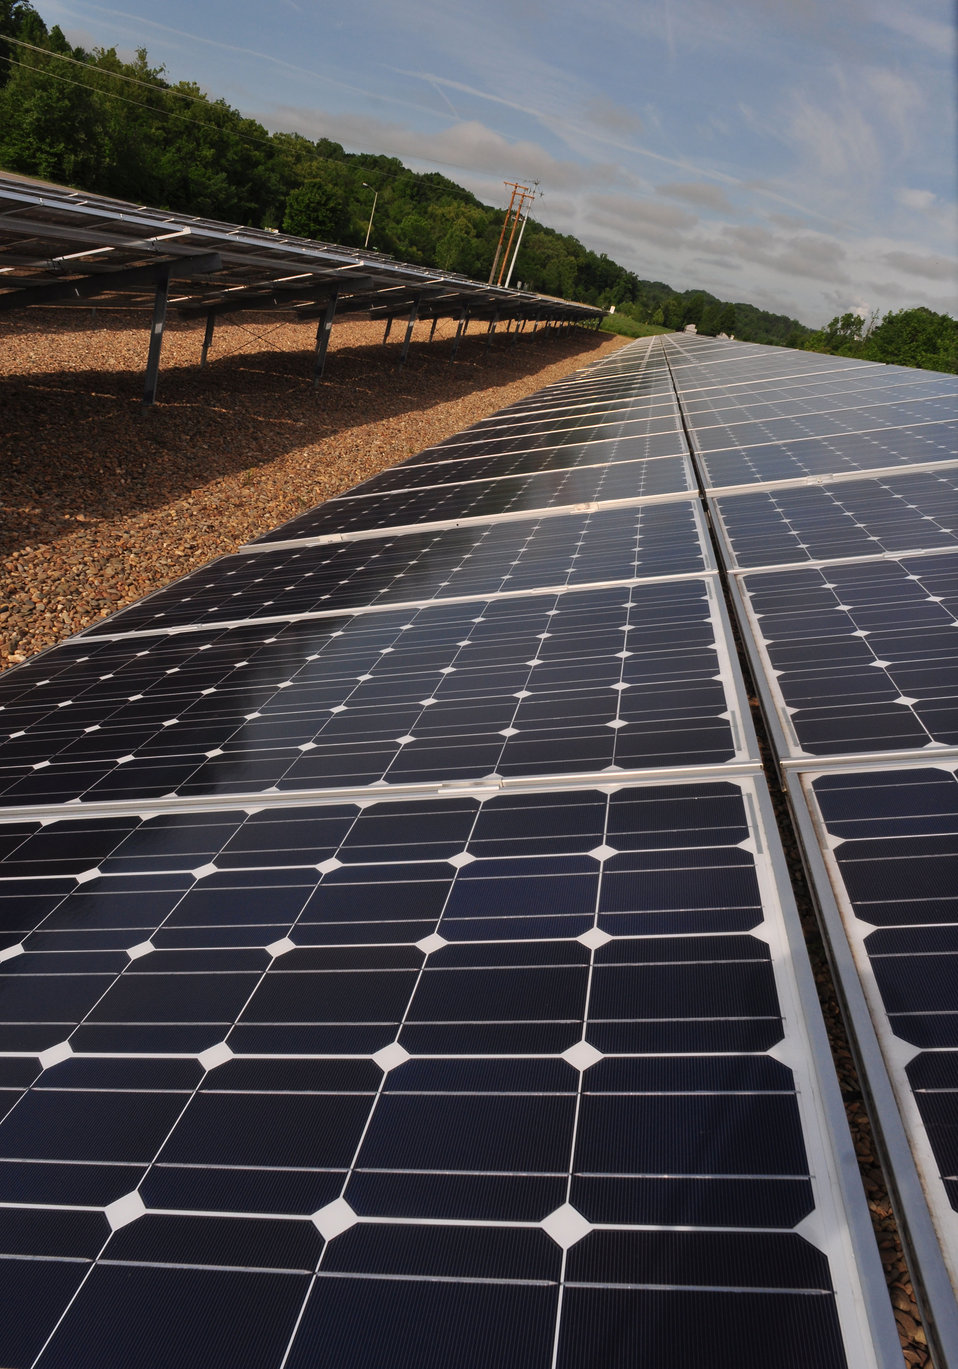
RSI Brightfield 1 solar array at East Tennessee Technology Park

12-086-261 DOE photo by Lynn Freeny

Oak Ridge Tennessee 5/15/2012